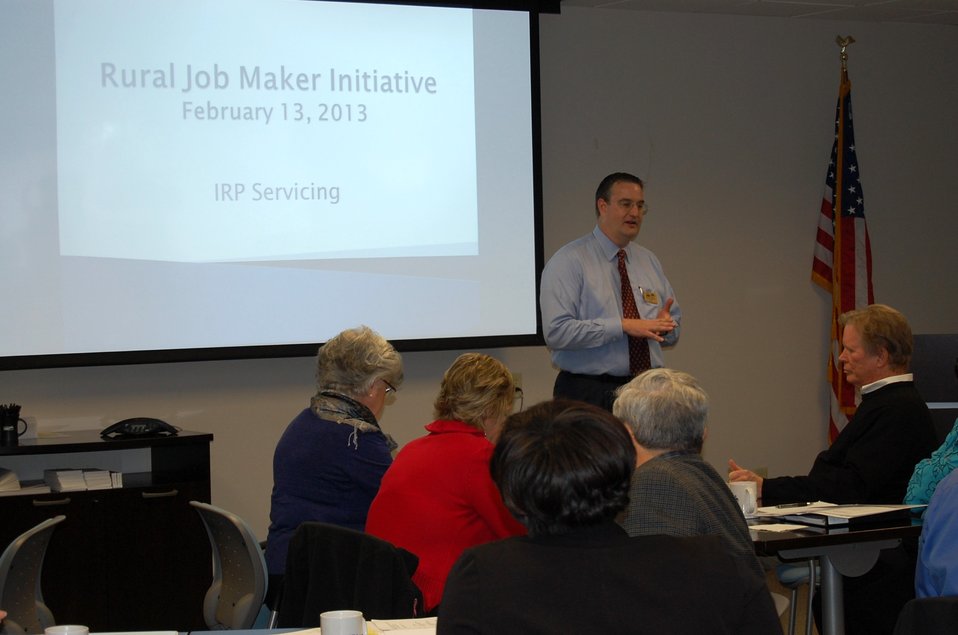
U.S. Department of Agriculture (USDA) Rural Development (RD) Business and Cooperative Program Director Bruce Pleasant facilitates the “Rural Job Maker Initiative Roundtable” held recently in Raleigh, NC with more than 35 community and business stakeholders and revolving loan providers on Feb. 12, 2013.